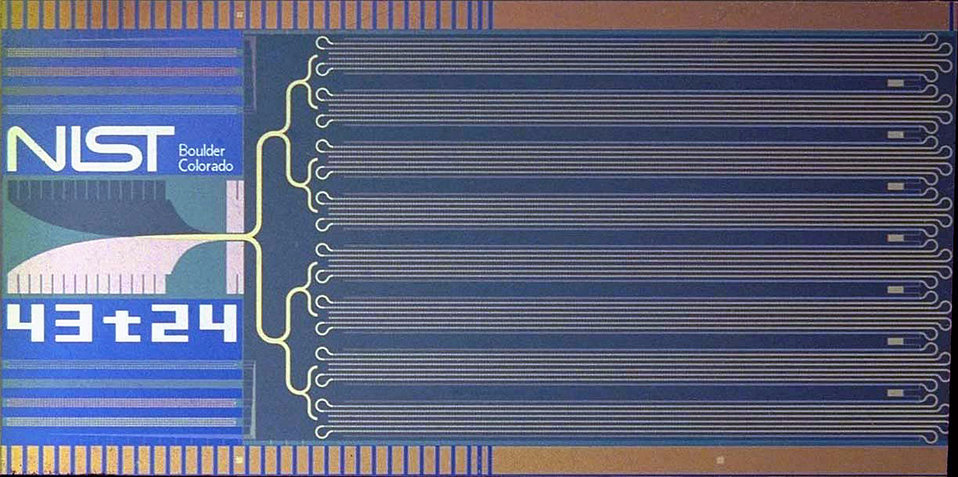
Ten-volt chip

NIST fabricated the first 10-volt chip made of all-niobium superconducting electrodes, which made it less susceptible to damage from handling and contamination. The chip is 10 millimeters by 20 millimeters in size and has 20,208 junctions made of niobium electrodes with aluminum-oxide barriers. The circuit design and fabrication process was transferred to industry and became the basis for the first commercial superconducting quantum voltage standard.